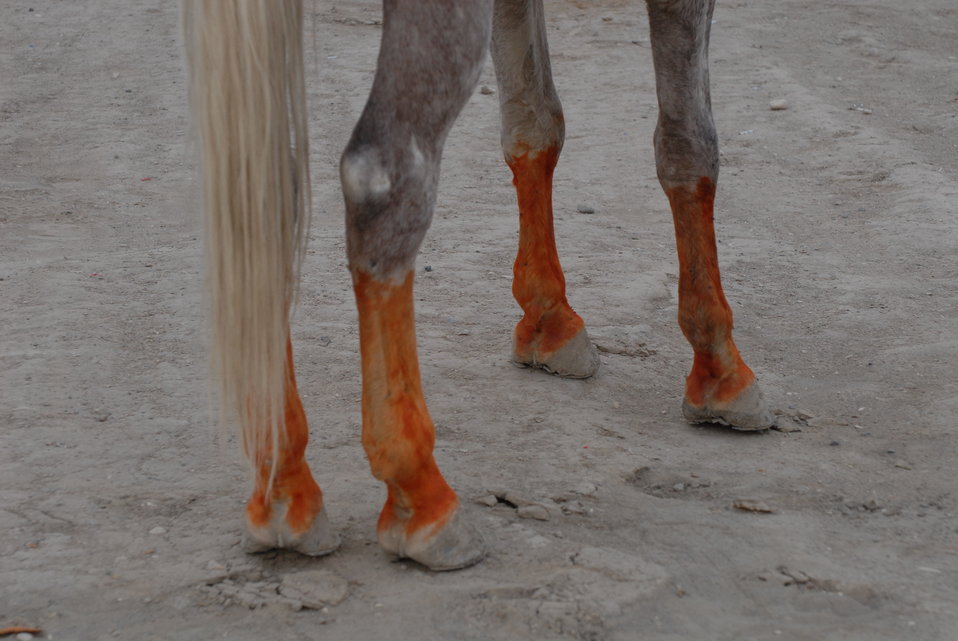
'On the Road' in Balkh Province